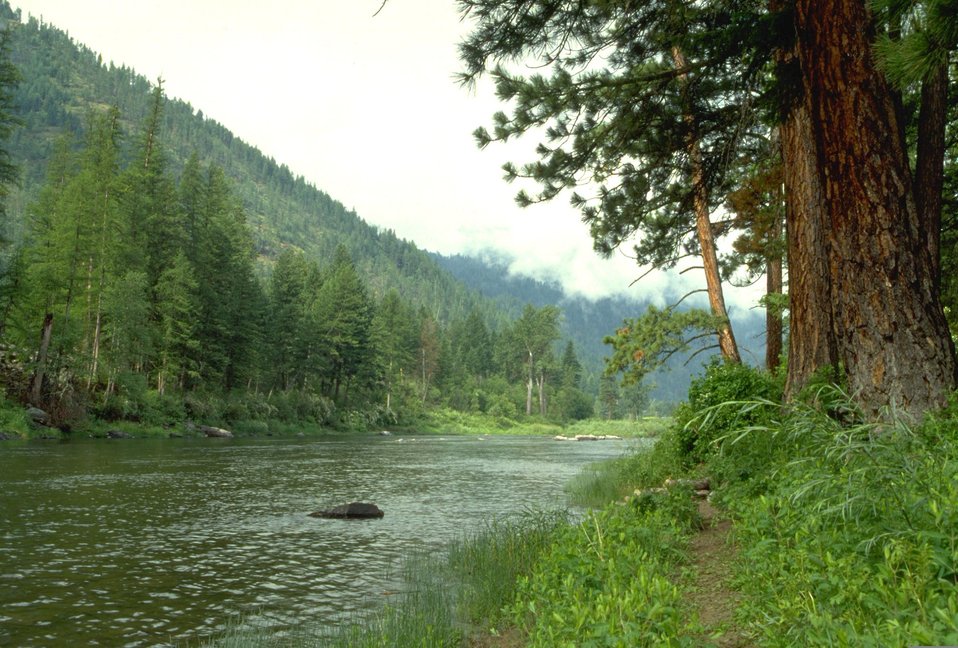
Blackfoot River in summer